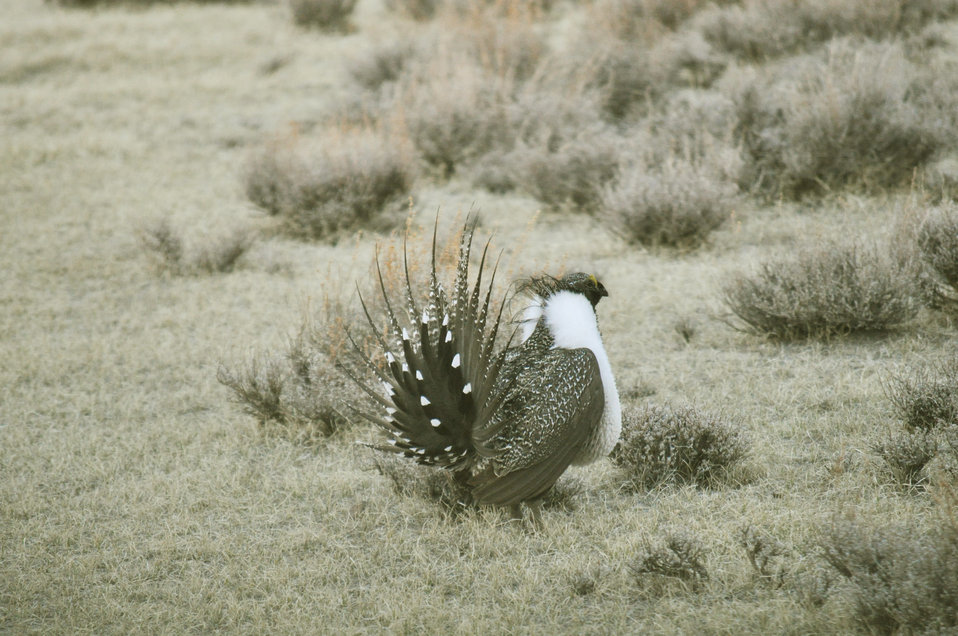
Male greater sage-grouse struts at lek (dancing or mating grounds) to attract females near Bodie, California.